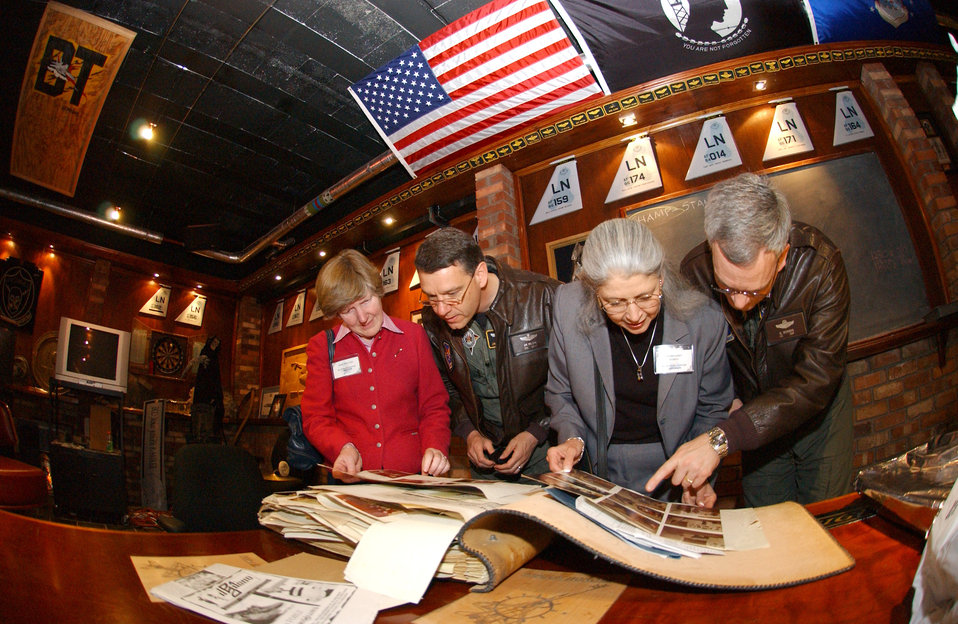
El Dorado Canyon remembrance

Veterans and visitors look through scrapbooks during the 20th anniversary observance of Operation El Dorado Canyon at Royal Air Force Lakenheath, England, on Friday, April 21, 2006.